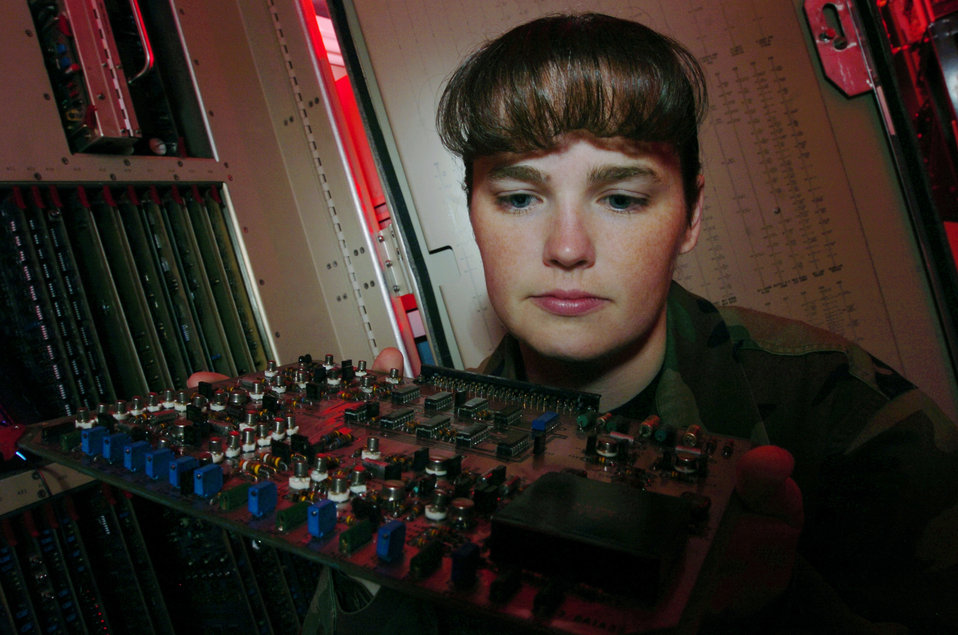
Yokota radar techs keep Pacific aircraft safe

YOKOTA AIR BASE, Japan -- Staff Sgt. Kelly McKenzie inspects a circuit card for airport surveillance radar processor equipment during a preventive maintenance inspection here. Radar technicians install, maintain, overhaul and repair ground aircraft control and warning systems used to guide incoming and outgoing aircraft here. She is assigned to the 374th Communications Squadron.